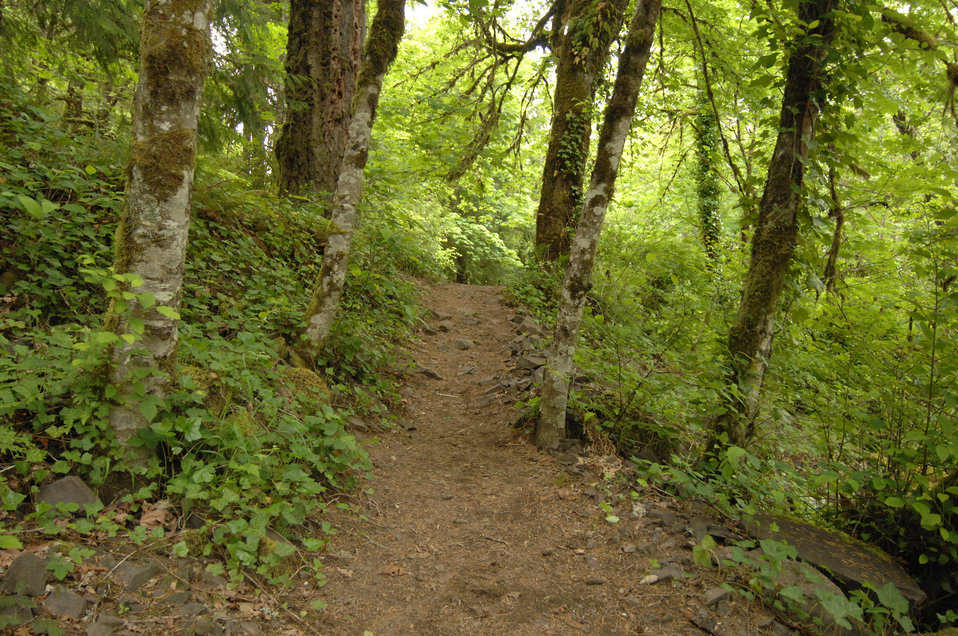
This is just one of many trails that borders the Umpqua River in the Umpqua National Forest in Oregon on June 10, 2008.